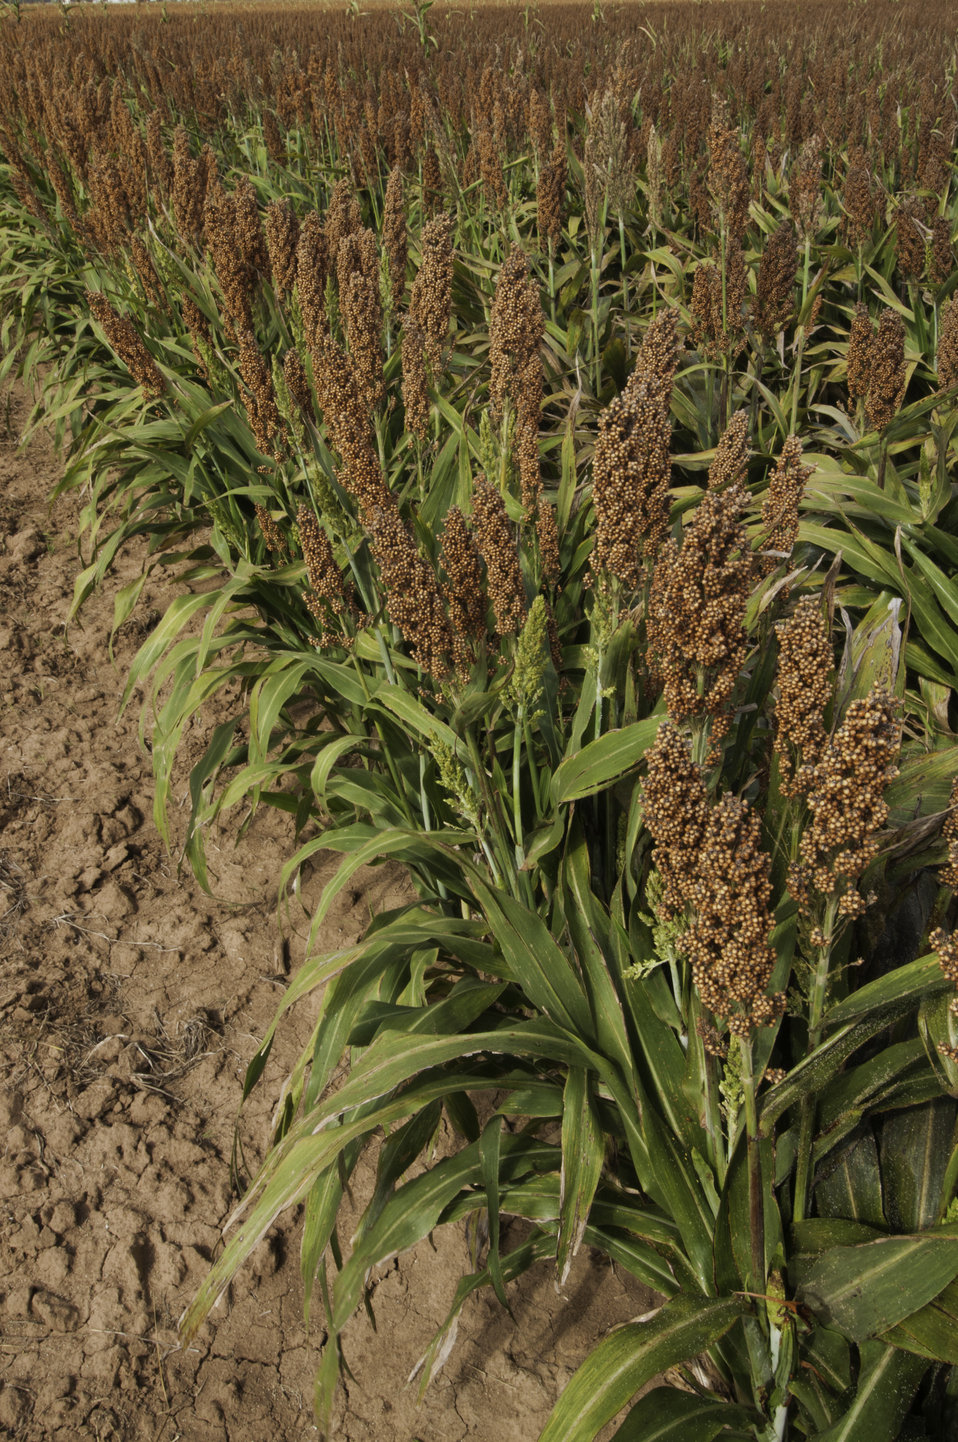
Grain sorghum grows on the Wilder Farms Navasota, TX on Aug. 23, 2013. The ground shows signs of the Texas drought but the crop shows no ill affects from the drought USDA photo by Bob Nichols.